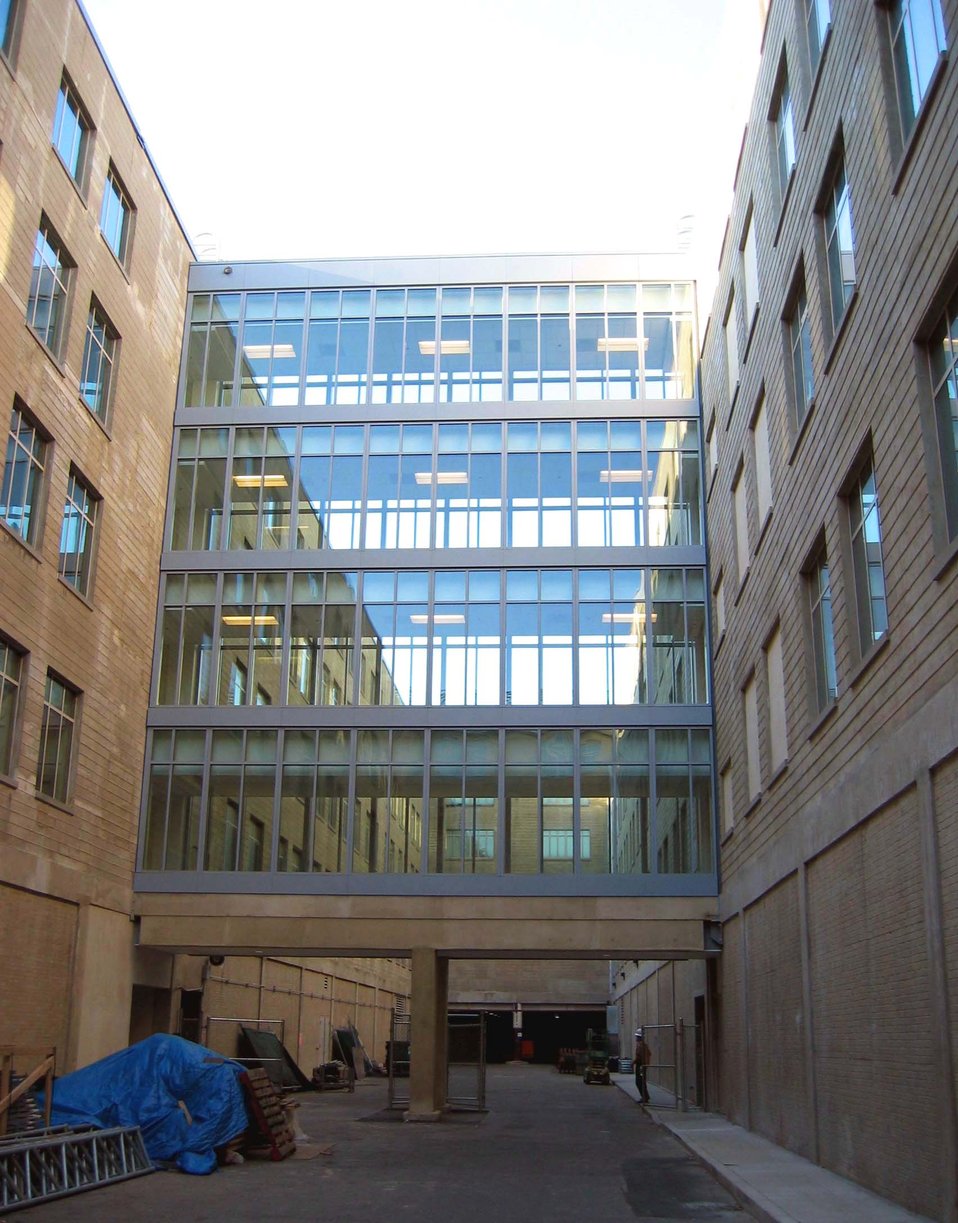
Pentagon

WASHINGTON -- After the Sept. 11 attack on the Pentagon, modifications were made to the existing renovation project. The addition of half corridors between rings of the Pentagon will provide more escape routes in case of an emergency. The glass causeways can withstand hurricane-force winds.